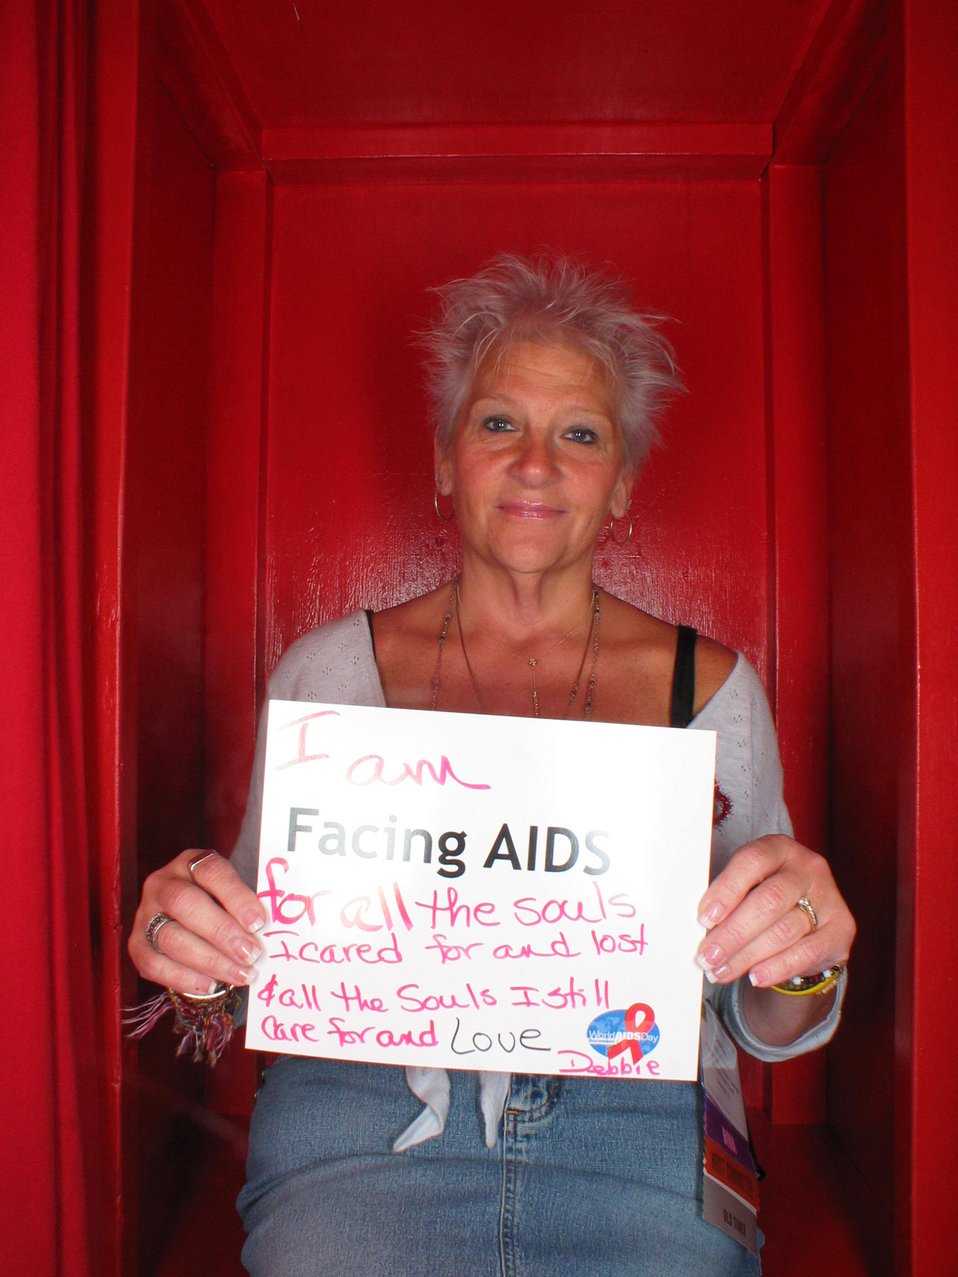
I am Facing AIDS for all the souls I cared for and lost and all the souls I still care for and love.